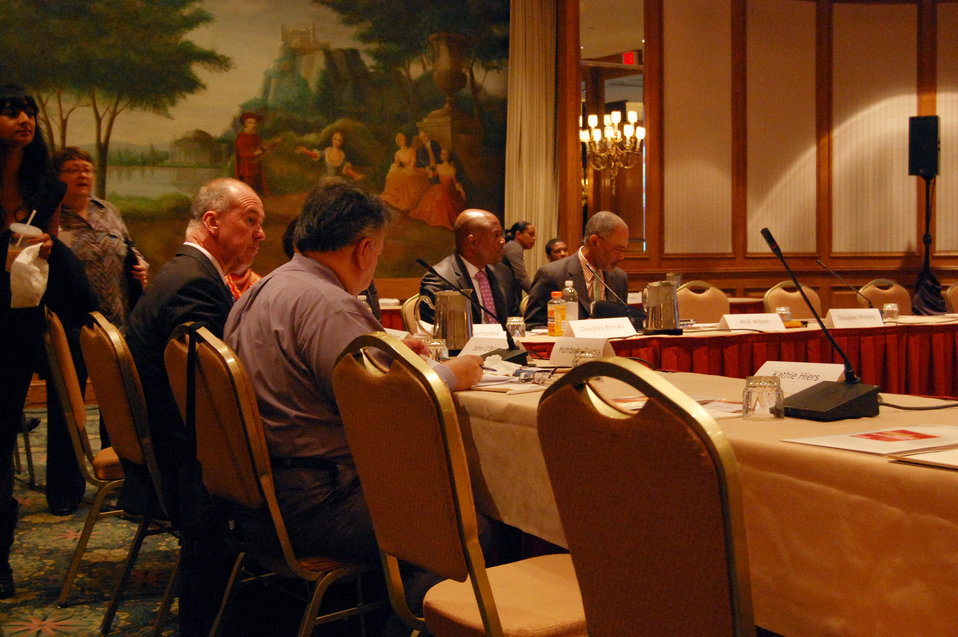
PACHA conf034